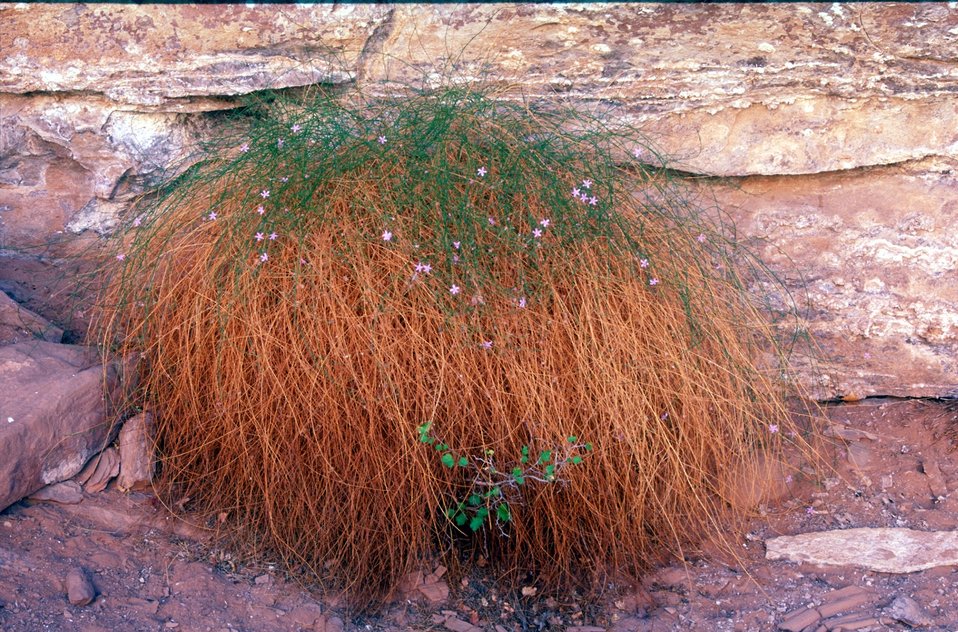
Vegetation in Hunter Canyon near Moab, Utah.